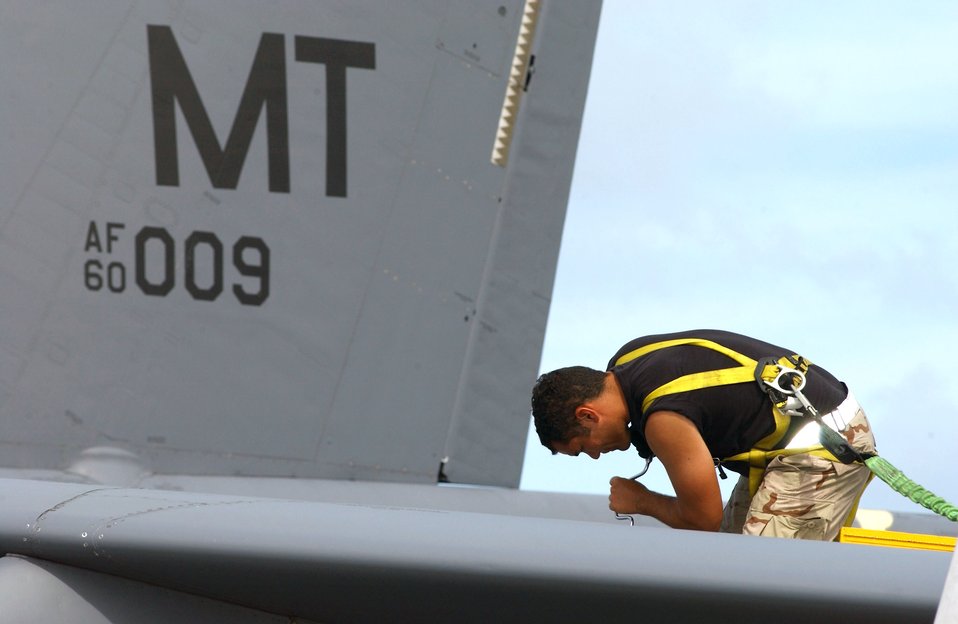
Mending a broken wing

OPERATION ENDURING FREEDOM -- Senior Airman Shaun Ahmadi works on a B-52 Stratofortress at a forward-deployed location June 3. He is a crew chief with the 40th Expeditionary Maintenance Squadron and is deployed from Minot Air Force Base, N.D.